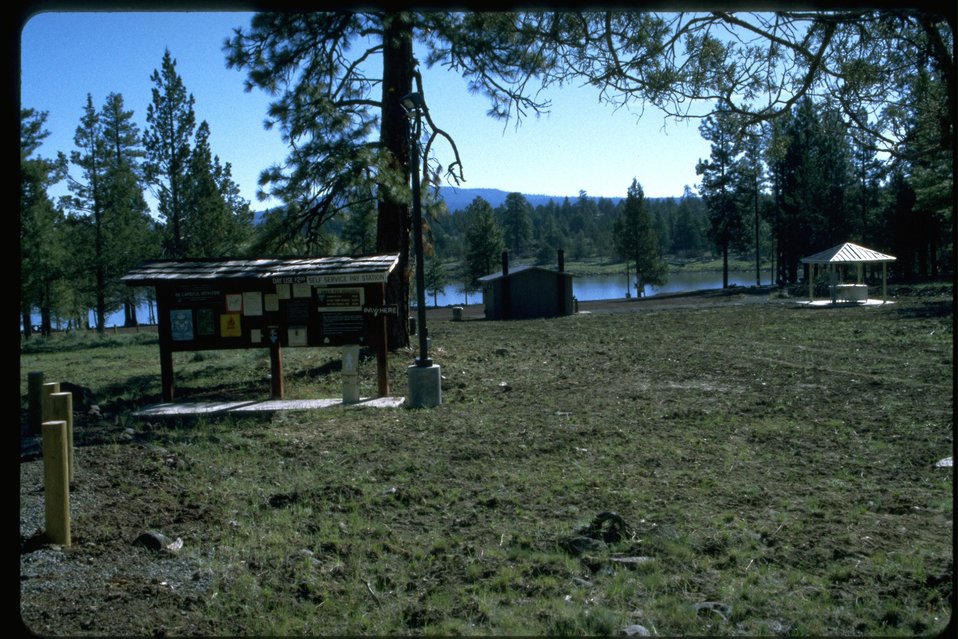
Gerber Reservoir Campsite.